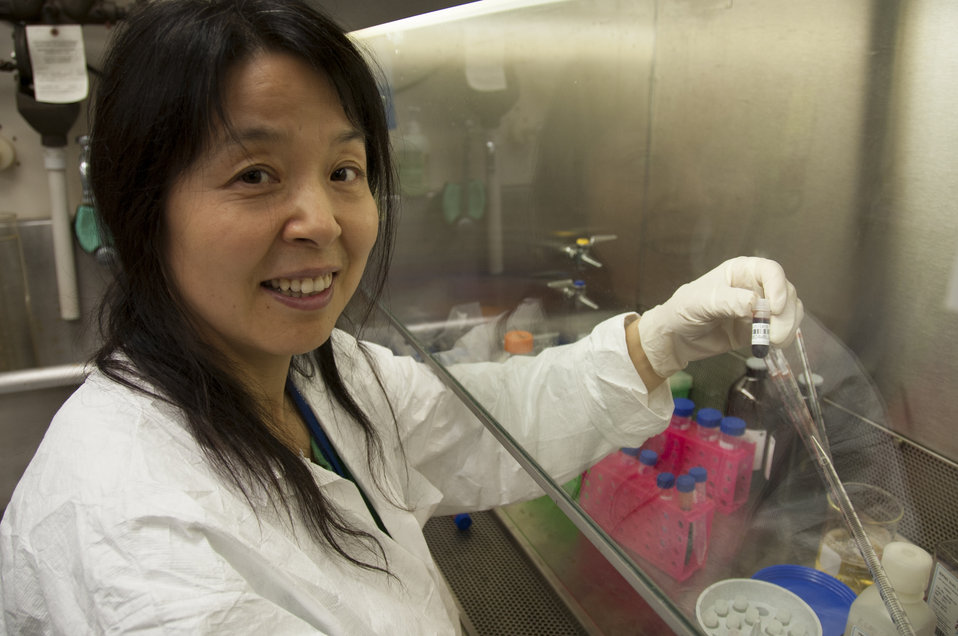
Blood Research: Saving Lives (8500)

Meihong Liu, Ph.D., working at FDA’s labs in the Office of Blood Research and Review, transfers blood cells to a 'cryovial' for long-term frozen storage. FDA is responsible for the safety of our nation’s blood supply and is at the forefront of evaluating and encouraging innovative technologies for protecting it.

Read this Consumer Update to learn more: Advances in Saving Lives with Blood